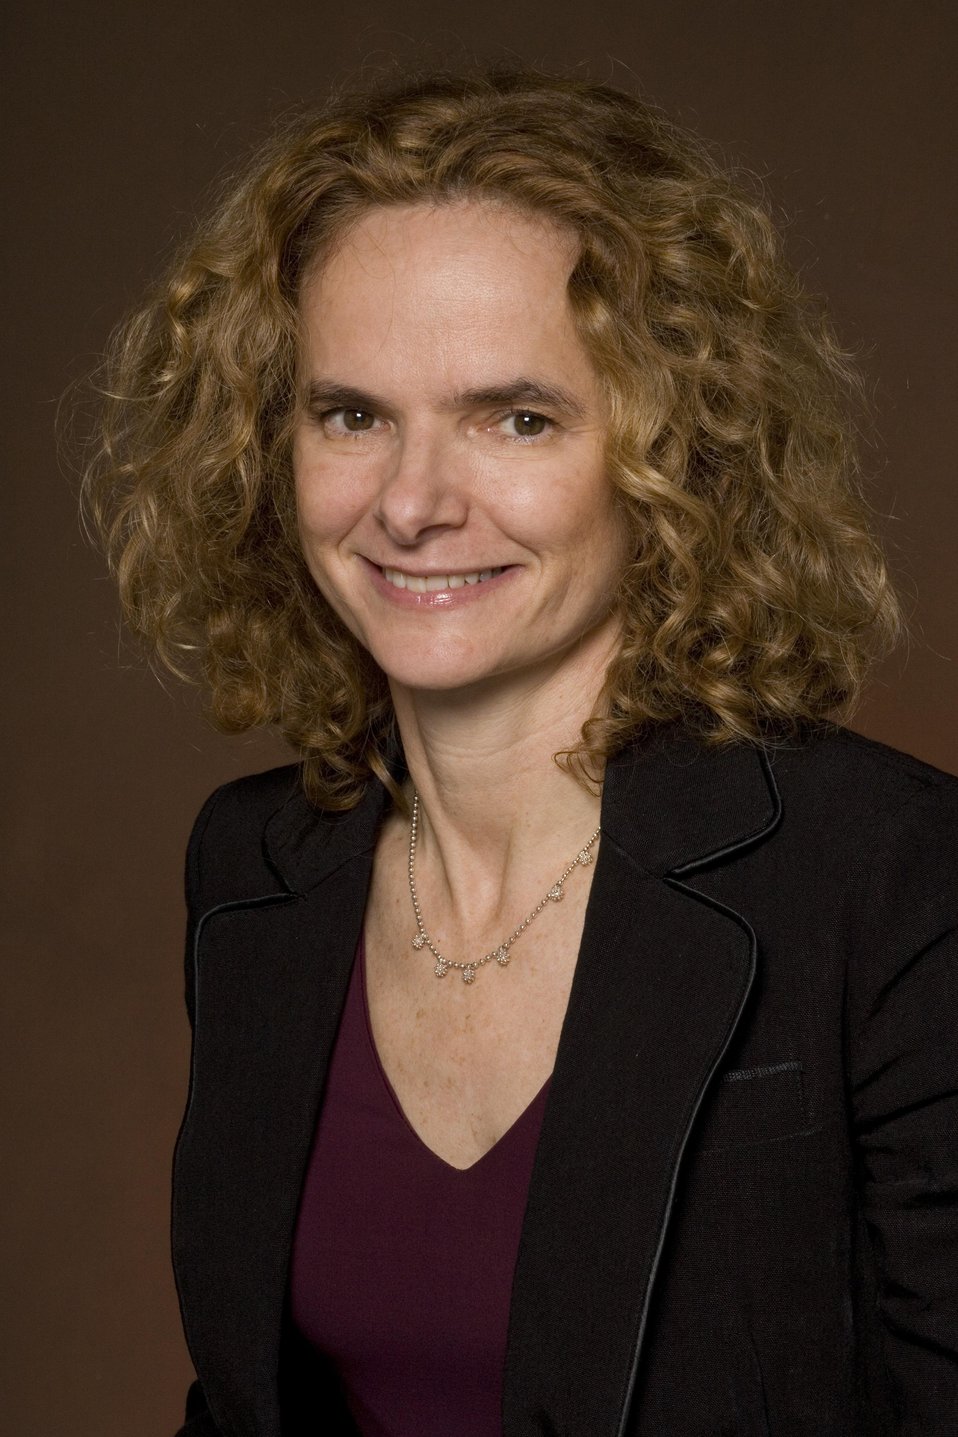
Dr. Nora Volkow, M.D., Director of the National Institute on Drug Abuse